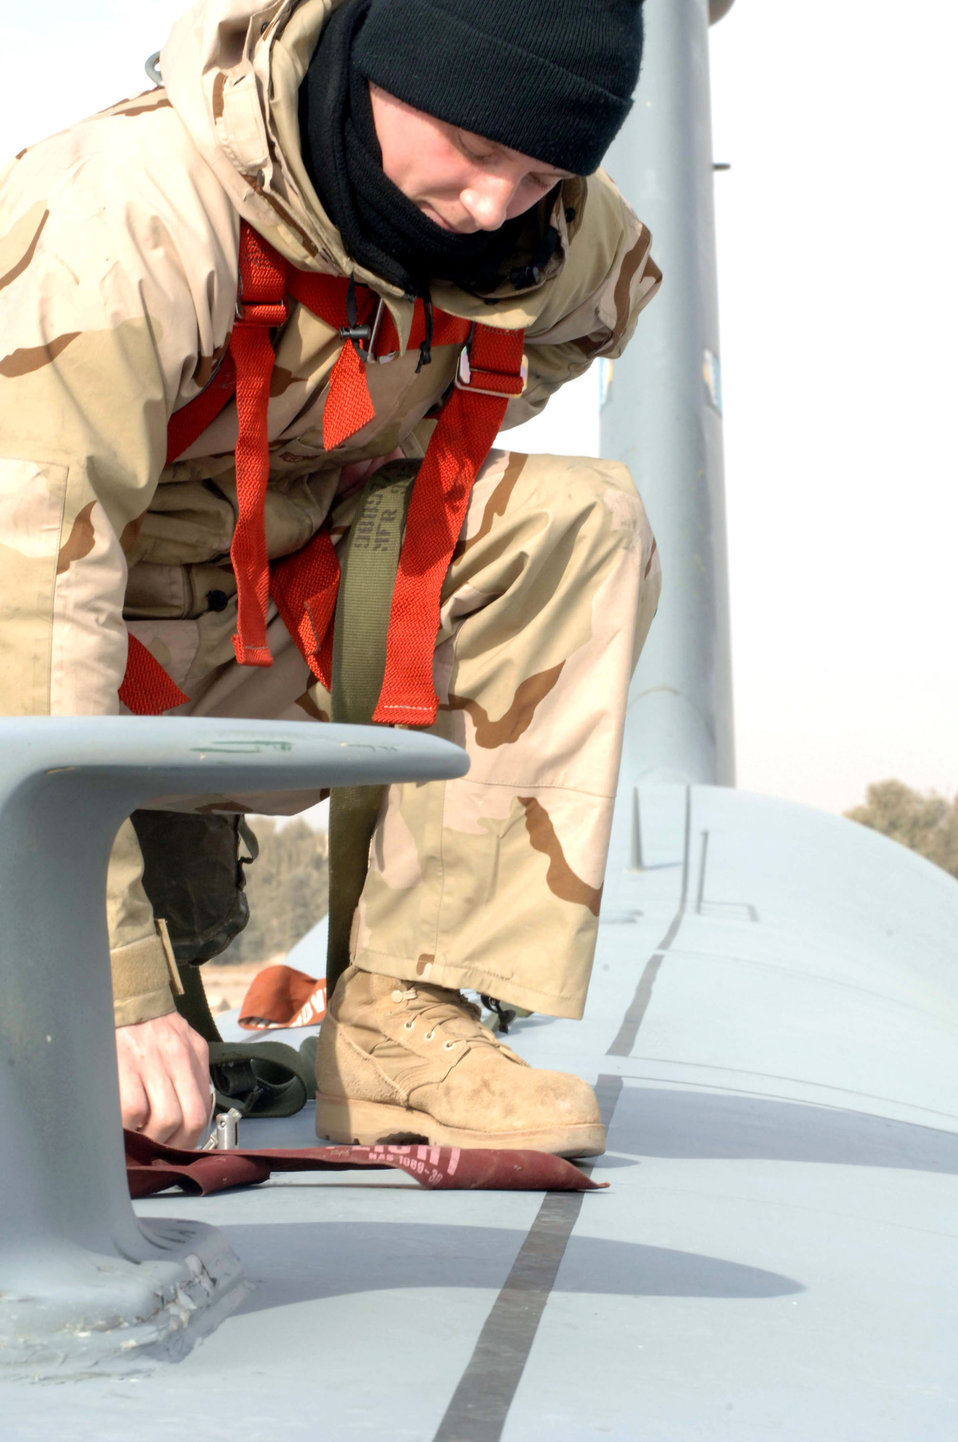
A 'galaxy' far, far away

Airman 1st Class Chris Olmstead attaches his safety harness to the safety rail of a C-5 Galaxy before performing maintenance on the aircraft Jan. 1 at Balad Air Base, Iraq. The gigantic C-5, with its tremendous payload capability, provides airlift in support of the war on terrorism. The C-5 can carry fully equipped combat-ready military units to any point in the world on short notice and then provide field support required to help sustain the fighting force. Airman Olmstead is a 721st Air Mobility Operations Group crew chief deployed from Travis Air Force Base, Calif.